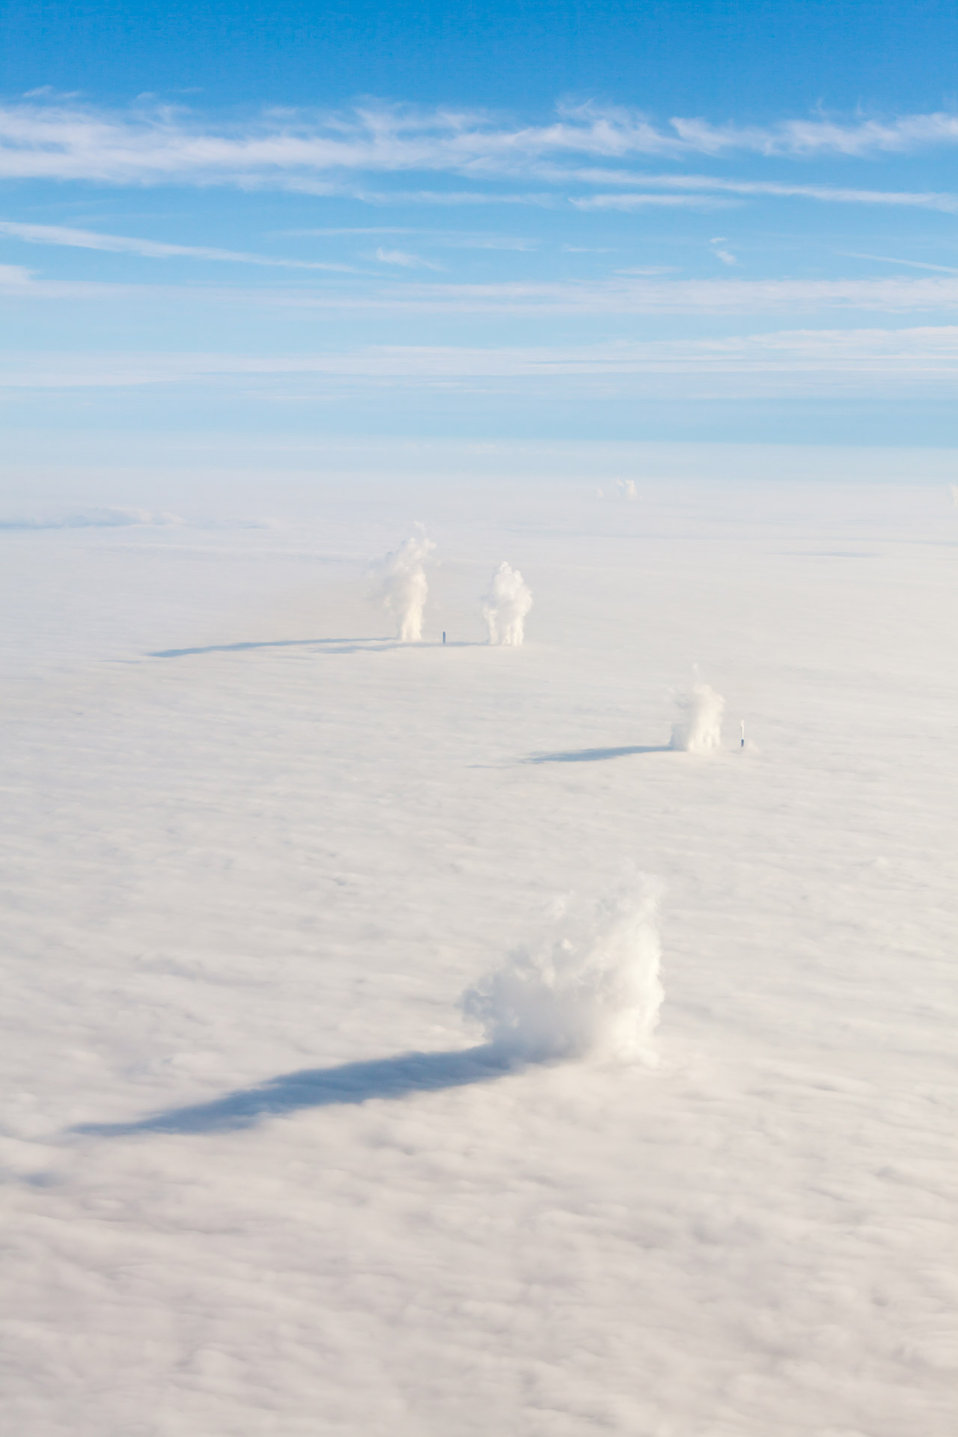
Factory chimneys and inversion

Factory chimneys during inversion weather.